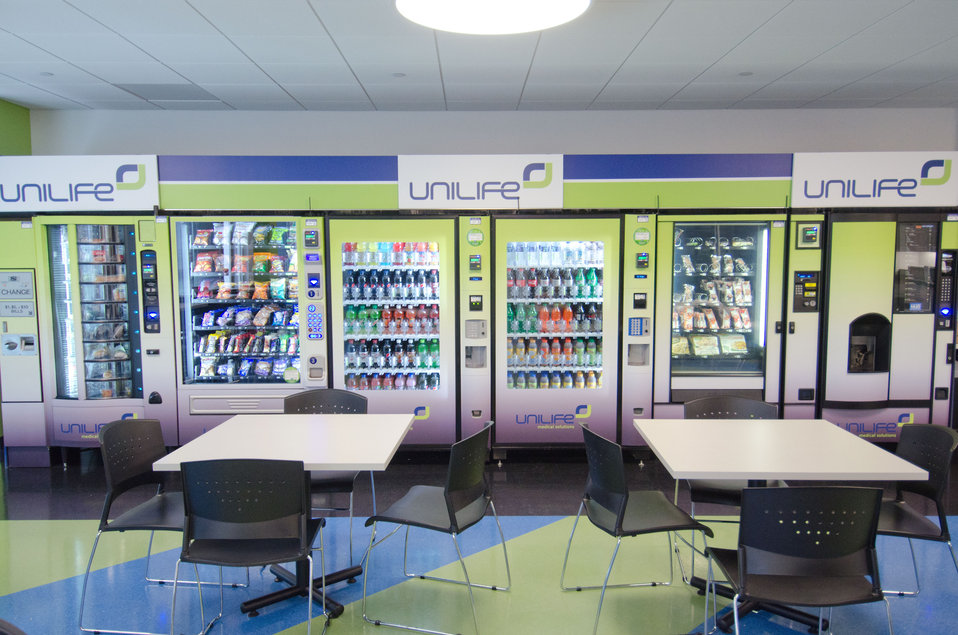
Break room with vending machines at Unilife, a medical device company focused on the design, development, manufacture and supply of a proprietary range of retractable syringes on Monday, April 20, 2011 in York, PA. In partnership with Sanofi-aventis, Mikron Group, and MDMA, U.S. Department of Agriculture Rural Development was able to guarantee $18,000,000 through its Business and Industry Guaranteed Loan Program to construct a custom-built, global headquarters and commercial production facility in York, Pennsylvania. The 165,000 sq. ft. facility was completed in late 2010 and can accommodate future growth as well as the Company’s projected demand from pharmaceutical and healthcare companies for its proprietary range of Unifill ready-to-fill (prefilled) and Unitract general purpose safety syringes. Stage one of the facility is designed to accommodate the production of up to 400 million Unilife syringes per year and to meet stringent pharmaceutical standards for primary drug containers. Adjacent to the manufacturing facility is Unilife’s global headquarters that support administrative, marketing, new product development, quality laboratories and other operational functions. Unilife, which first arrived in Pennsylvania in 2006. The company has doubled its employees for the past three years. There are approximately 150 employees, and they expect to double the number by 2015.